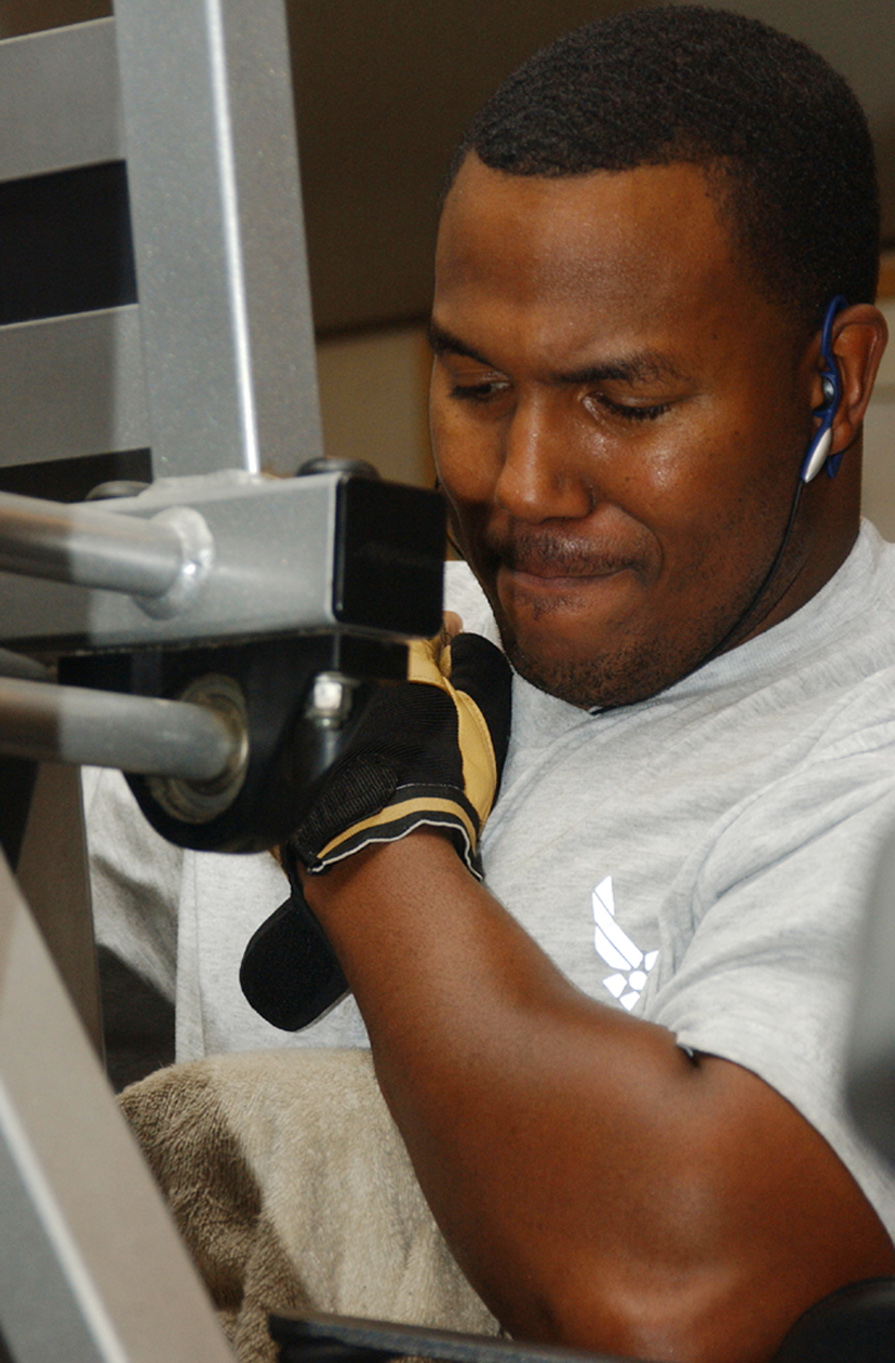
Working out

ALI BASE, Iraq (AFPN) -- Staff Sgt. Edward Weathersby works out his shoulder muscles. Sergeant Weathersby added two hours of exercise to his regular daily routine to stay fit while deployed and to make his time go faster. He is a metals technician craftsman with the 777th Expeditionary Airlift Squadron.